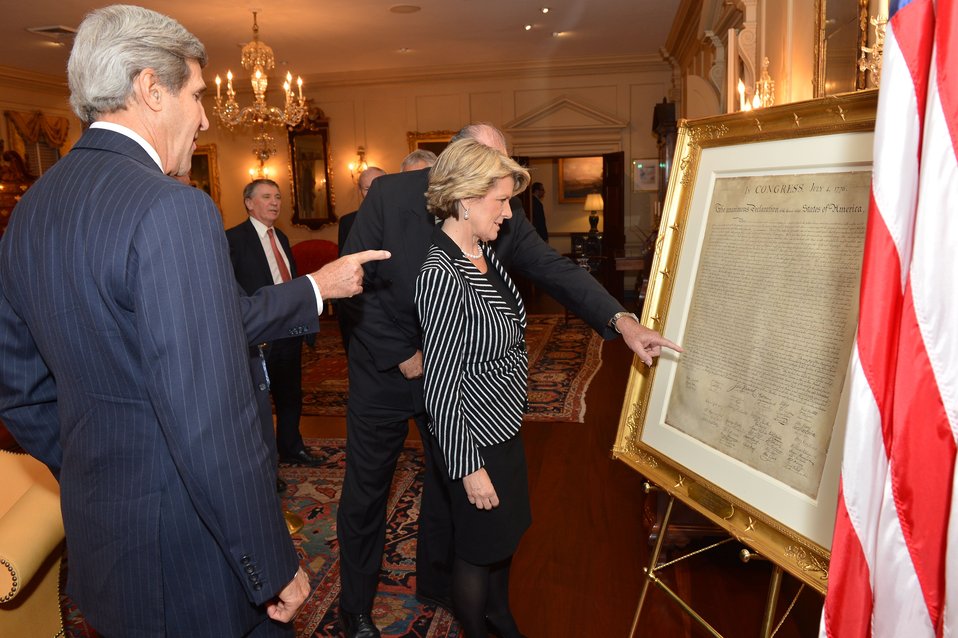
Secretaries Kerry and Hagel Show Australian Ministers Bishop and Johnston a Copy of the Declaration of Independence

U.S. Secretary of State John Kerry, with U.S. Secretary of Defense Chuck Hagel, shows Australian Foreign Minister Julie Bishop and Australian Defense Minister David Johnston a copy of the Declaration of Independence in the John Quincy Adams State Drawing Room at the U.S. Department of State in Washington, D.C., on November 19, 2013.